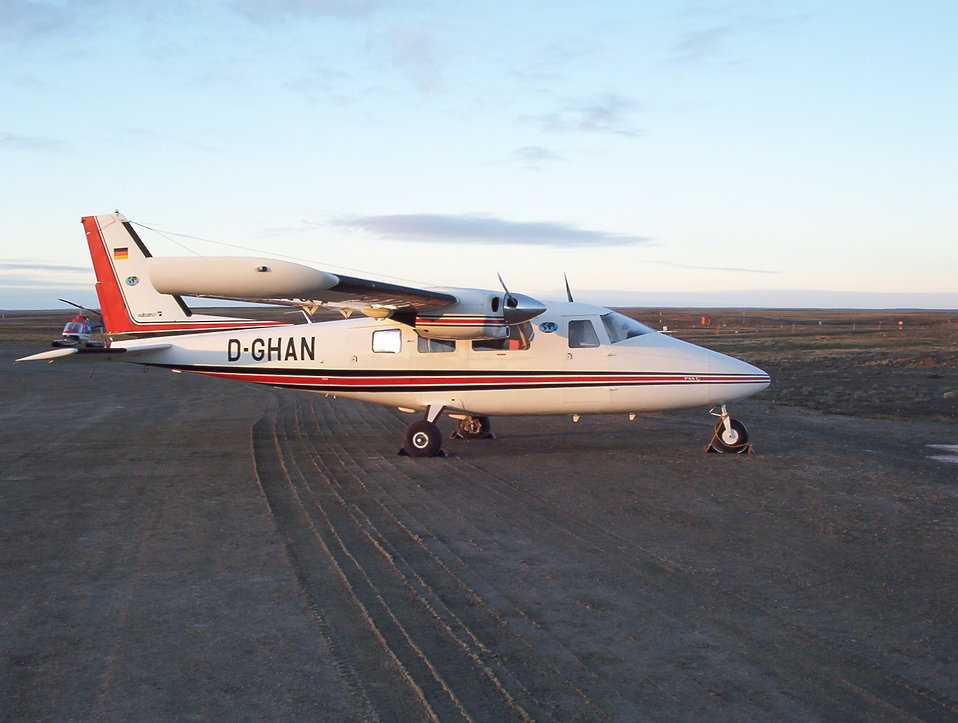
D-GHAN Partenavia p.68 Victor (P68) 01